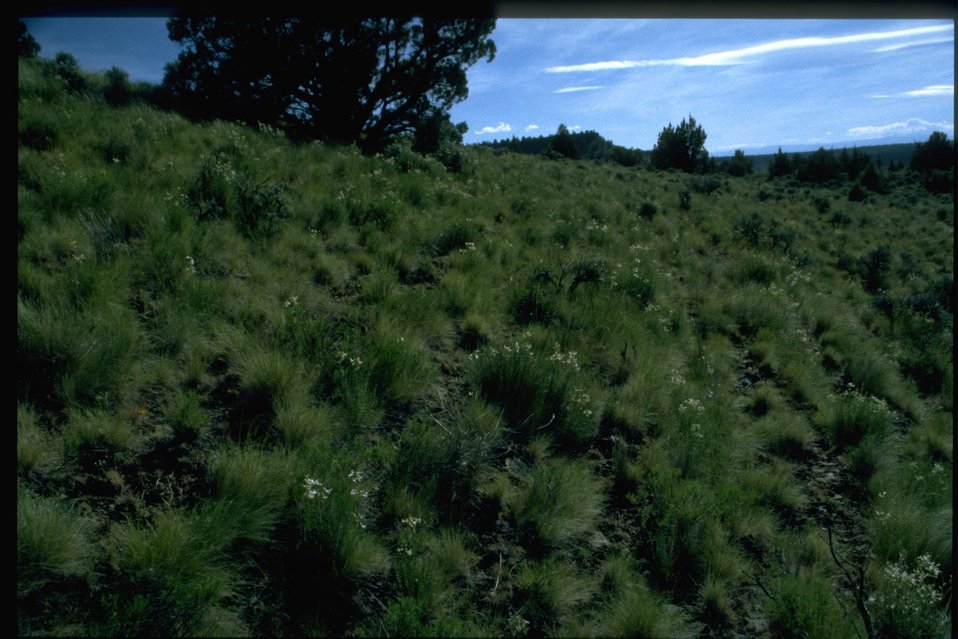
Native Idaho fescue (Frestuca idahoensis) with Idaho milkvetch (Astragalus conjunctus).